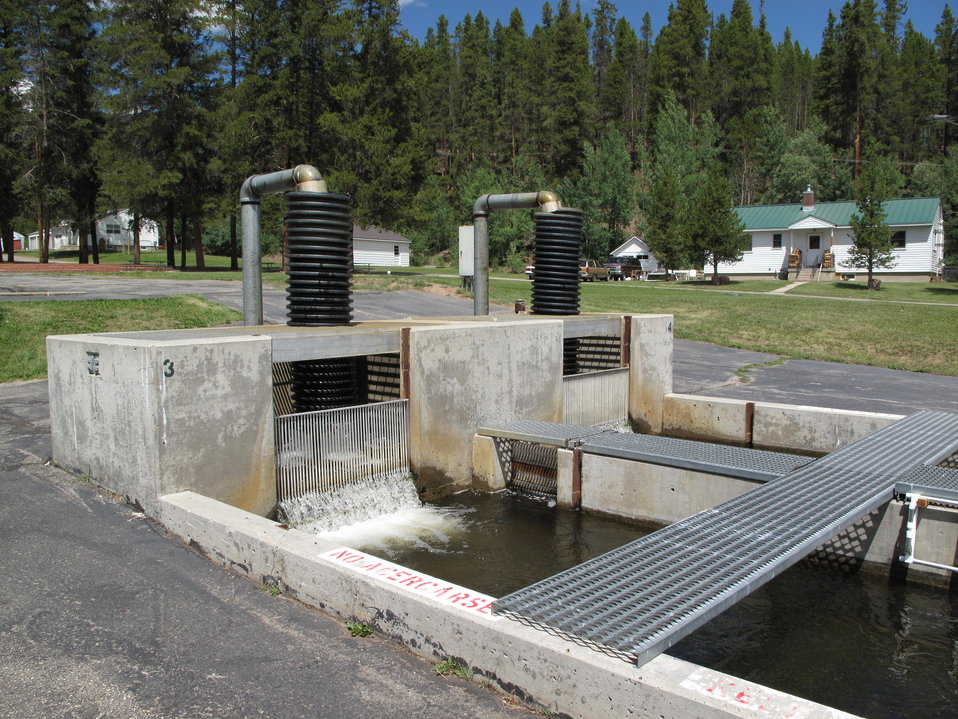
Leadville National Fish Hatchery

Outdoor Raceways.